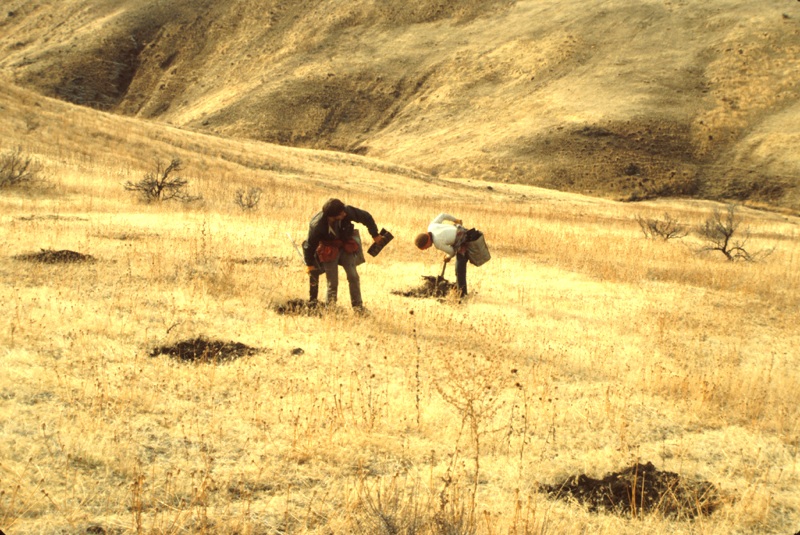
Medusa Head Bitterbrush seedlings Range Restoration Project Lower Snake River District